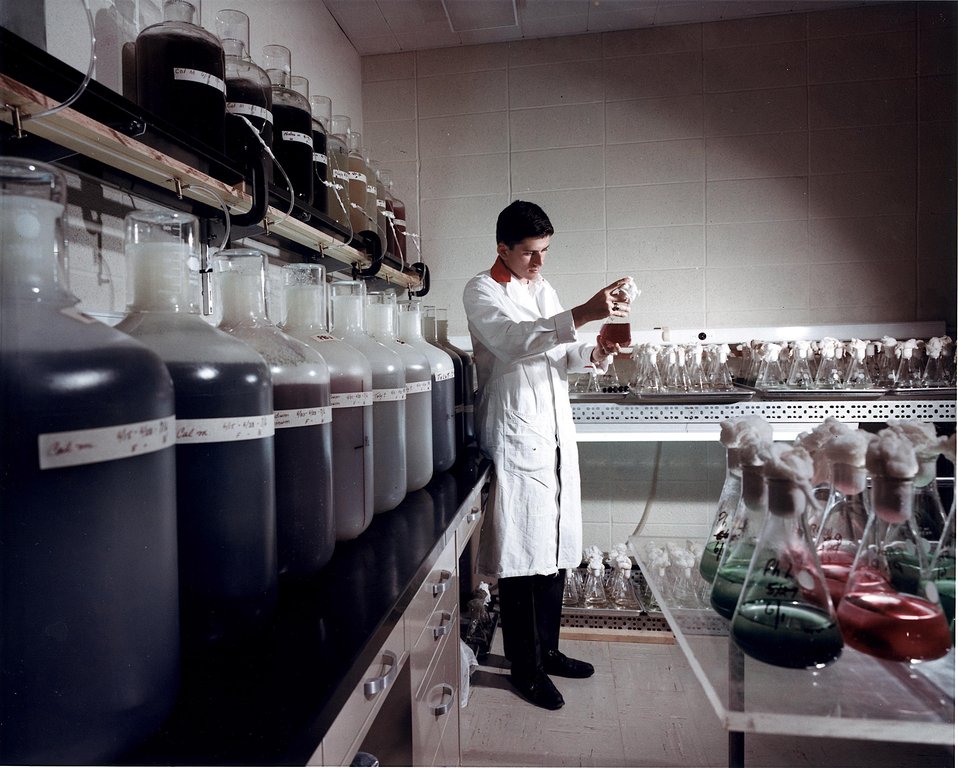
Examining small cultures of blue-green algae used for inoculating larger cultures, which are used in studies on the structure of photosynthetic bile pigments. c. 1966